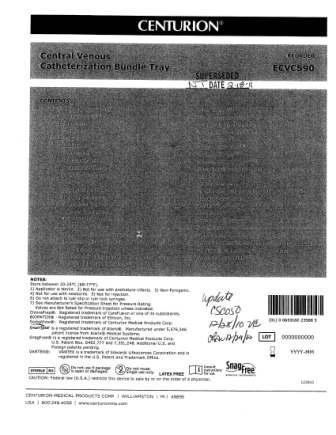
RECALLED - Convenience kits which contain bacteriostatic sodium chloride solution by American Regent

April 1, 2011 - Product Recall - Centurion Medical Products Initiates Voluntary Recall of Customized Convenience Kits (including select Central Venous Catheter, PICC Insertion, and VAD Trays) that contain American Regent’s Bacteriostatic Sodium Chloride Injection, USP, 0.9% 30 mL Multiple Dose Vials.